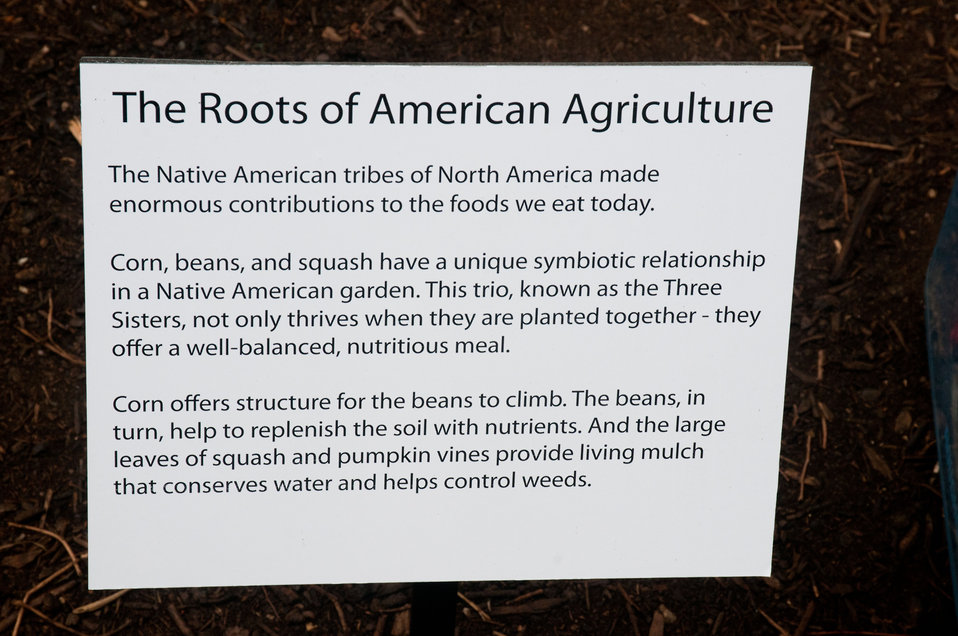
More than 30 students from Eastern and Western Tribes, Southeast Alaska, and Tuba City, Arizona came to the U.S. Department of Agriculture in Washington, DC, on Wednesday, April 27, 20ll to plant vegetable seeds that are indigenous to North America, in the Roots of American Agriculture garden.